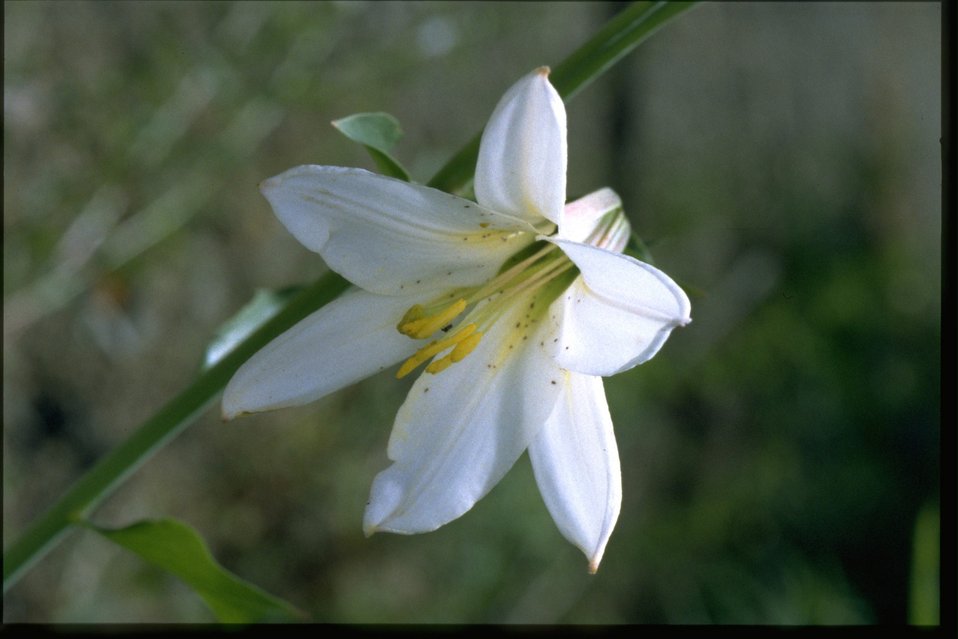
Closeup shot of Lilium washingtonianum.